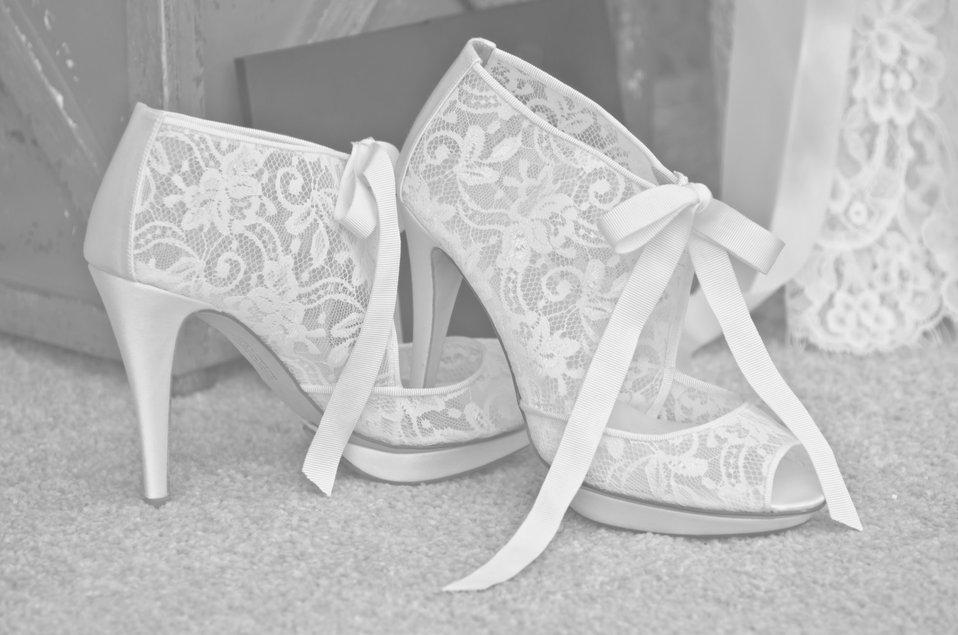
White women's shoes.